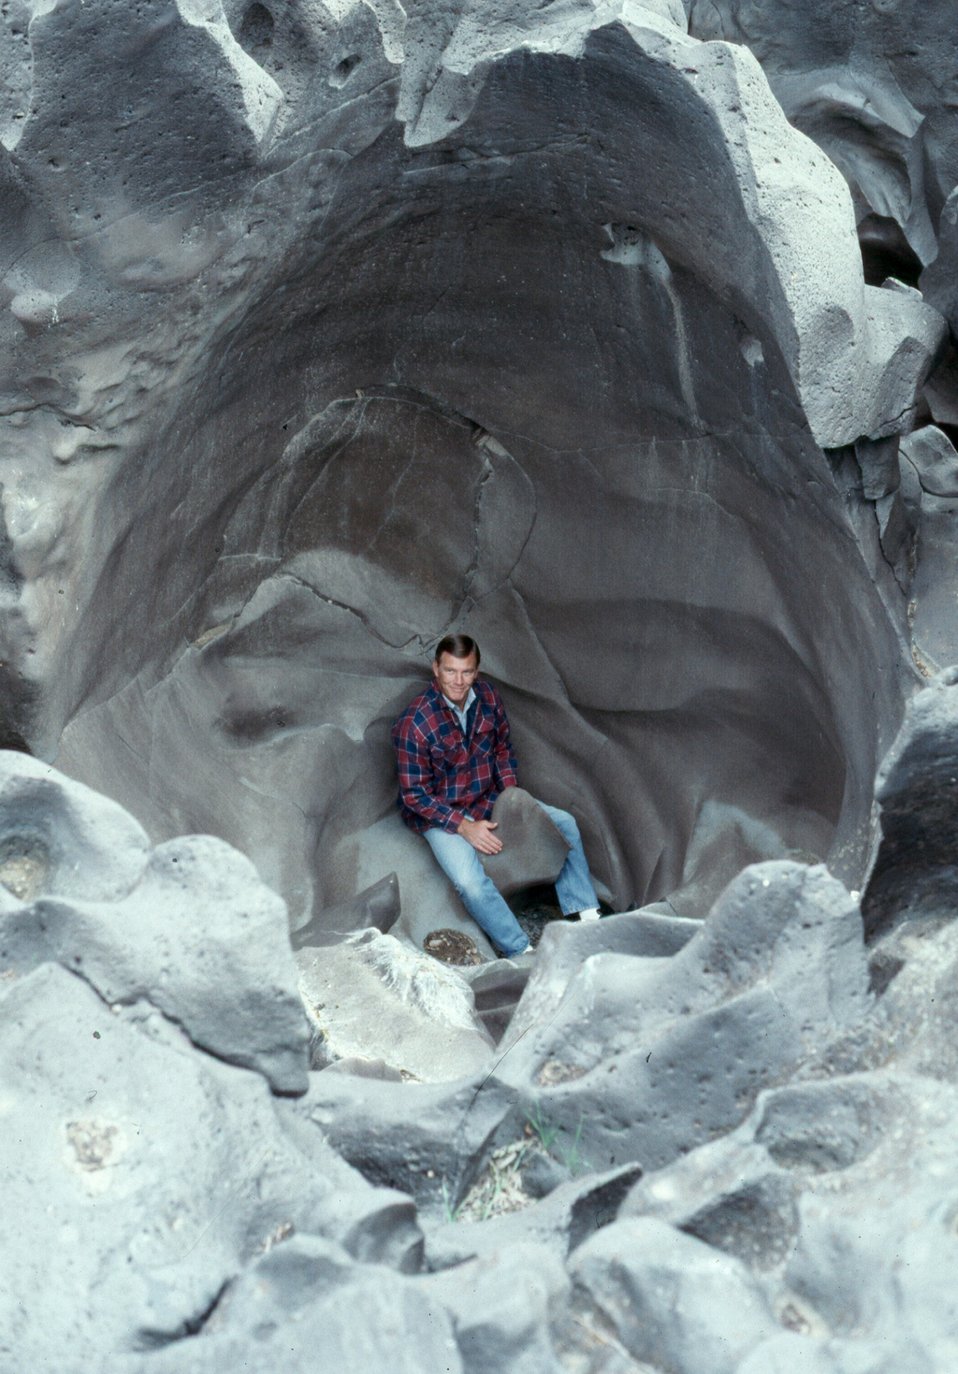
Large pothole Shoshone Field Office USRD Upper Snake River District